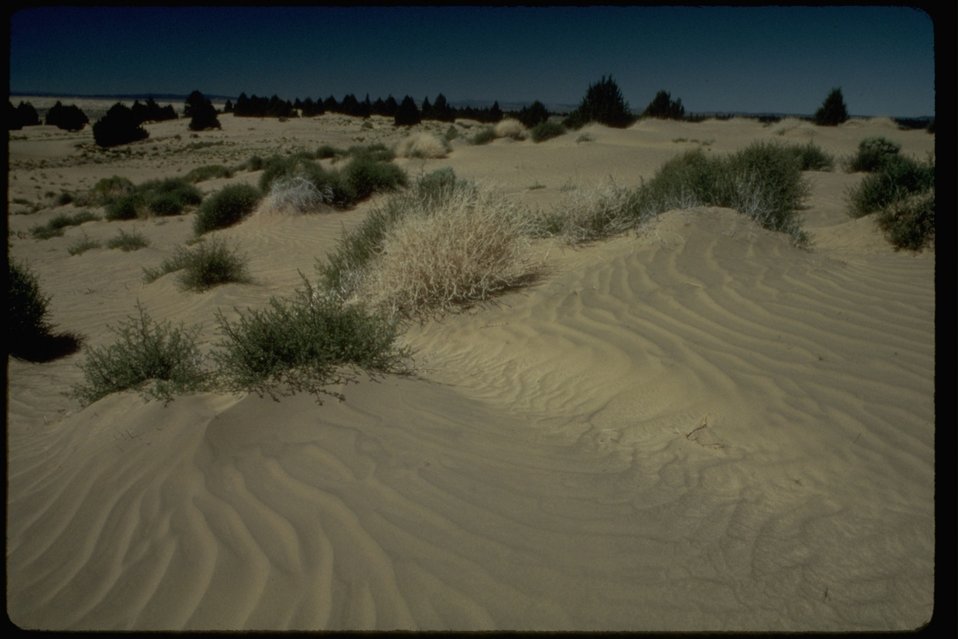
Sand Dunes Wilderness Study Area. OR 1-24